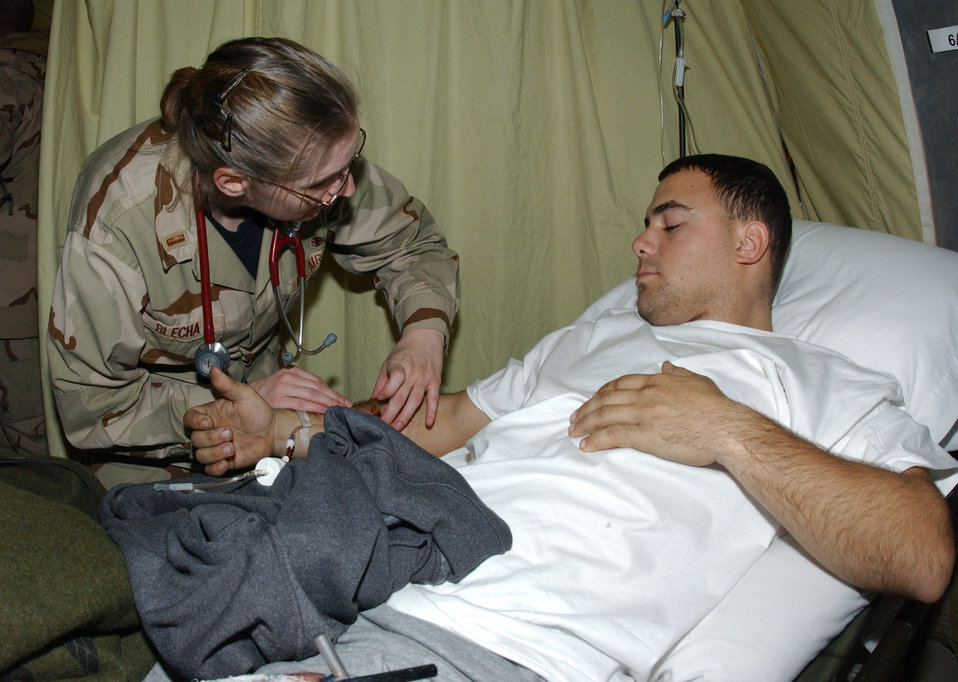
Lackland medics support OIF evacuation mission

BALAD AIR BASE, Iraq -- 2nd Lt. Tami Blecha performs a neurovascular assessment on Army Spc. Daniel Bartlett at the contingency aeromedical staging facility here Jan. 16. Specialist Bartlett is a member of the Arkansas Army National Guard deployed as part of the 239th Engineering Company. Lieutenant Blecha is a clinical nurse deployed to Balad from the 859th Medical Operations Squadron at Lackland Air Force Base, Texas.